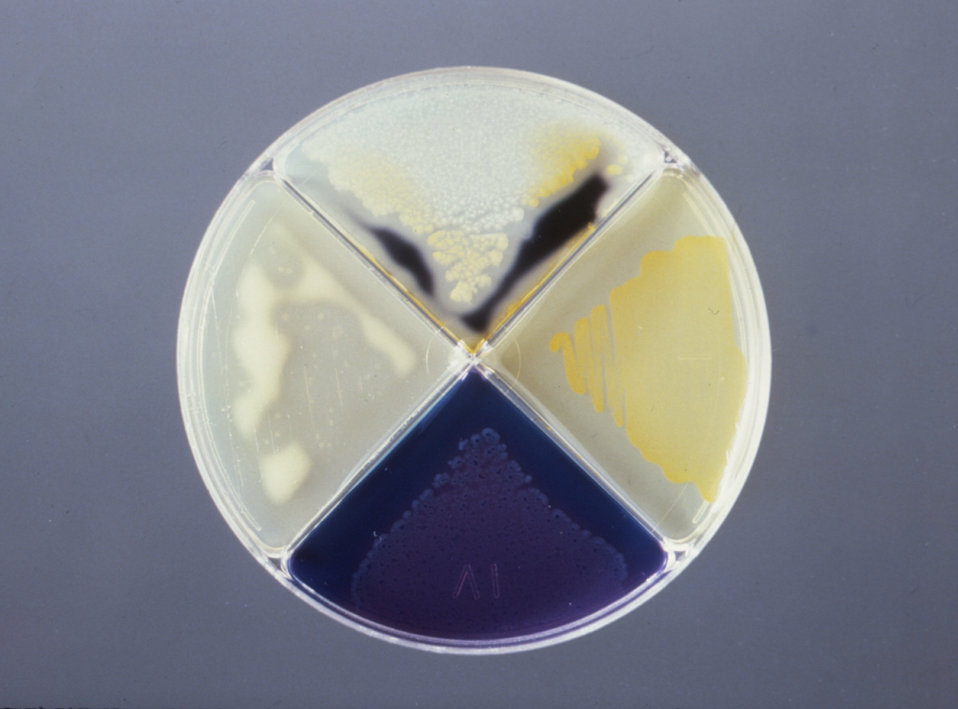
This Presumpto II quadrant plate developed by the CDC's Anaerobe Section, is showing reactivity in all four quadrants.